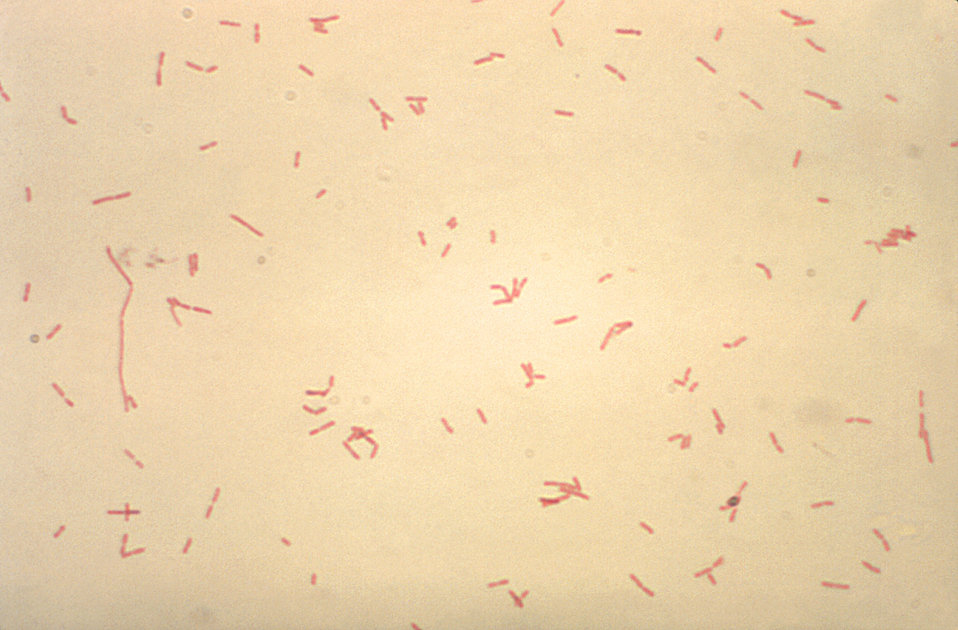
Magnified 1000X, this micrograph depicts Bacteroides fragilis subsp. fragilis bacteria that had been grown in Schaedler's broth, and processed using the Gram-stain method.